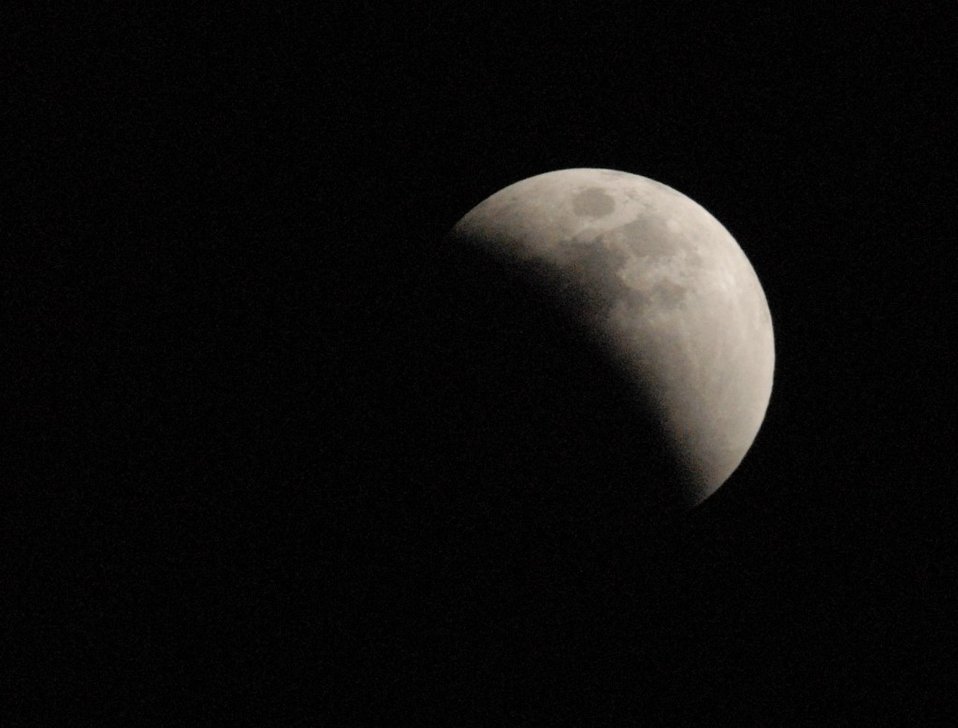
Uploaded by request of Bruce Kamplain.

Taken in Indiana

Taken from my front yard, on an extremely cold night, 10° with a wind that required lots of insulation, gloves, hat, scarf and a lot of time, I took time elapsed photographs of the eclipse from 8:30 PM until 10:00 PM. I think this photograph captures the eclipse about half way through its path; a stunning event.